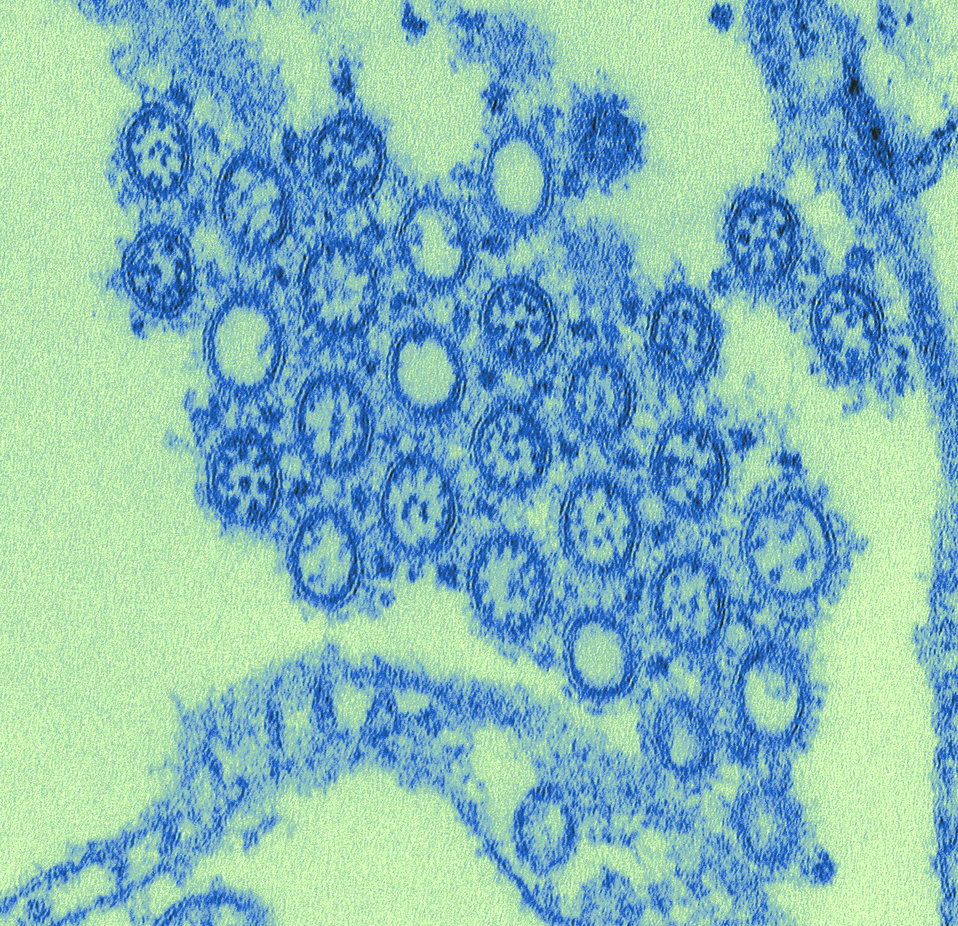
This highly-magnified, digitally-colorized transmission electron micrograph (TEM) depicted numbers of virions from a Novel Flu H1N1 isolate.What is 2009 H1N1 (swine flu)?